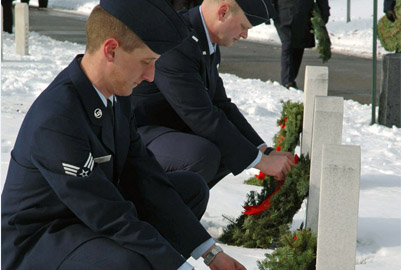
Wreaths Across America

Wreath laying ceremonies, like the one shown here, are scheduled at locations across America to honor those veterans who have made the ultimate sacrifice. A special ceremony will be held at Section 60 of Arlington National Cemetery to honor servicemembers who died while serving in Iraq and Afghanistan.